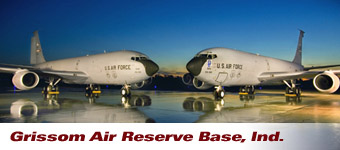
Grissom Air Reserve Base, Ind.

On May 12, 1968, Bunker Hill Air Force Base was renamed for Col. Virgil